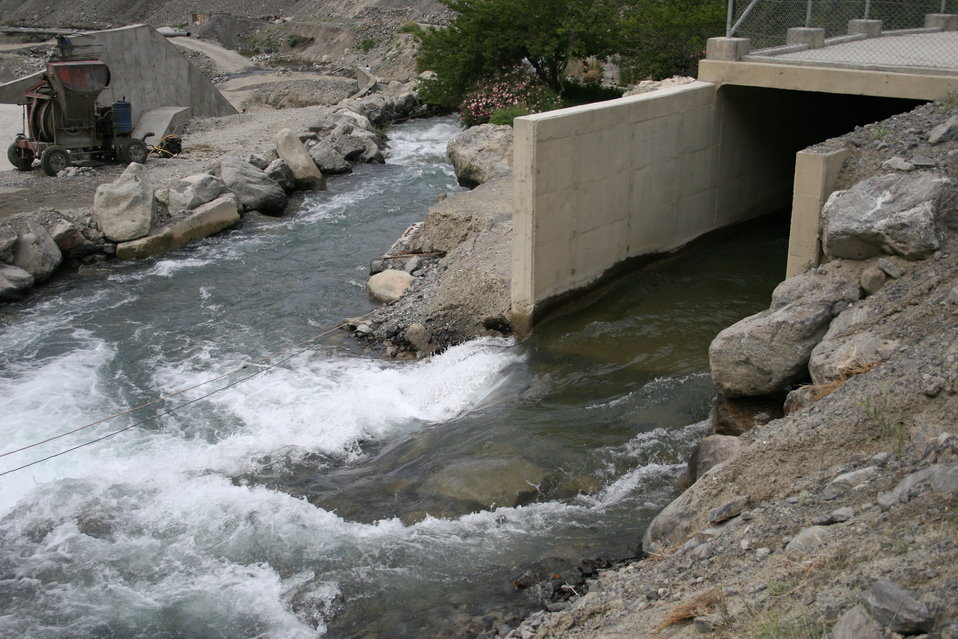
Satpara